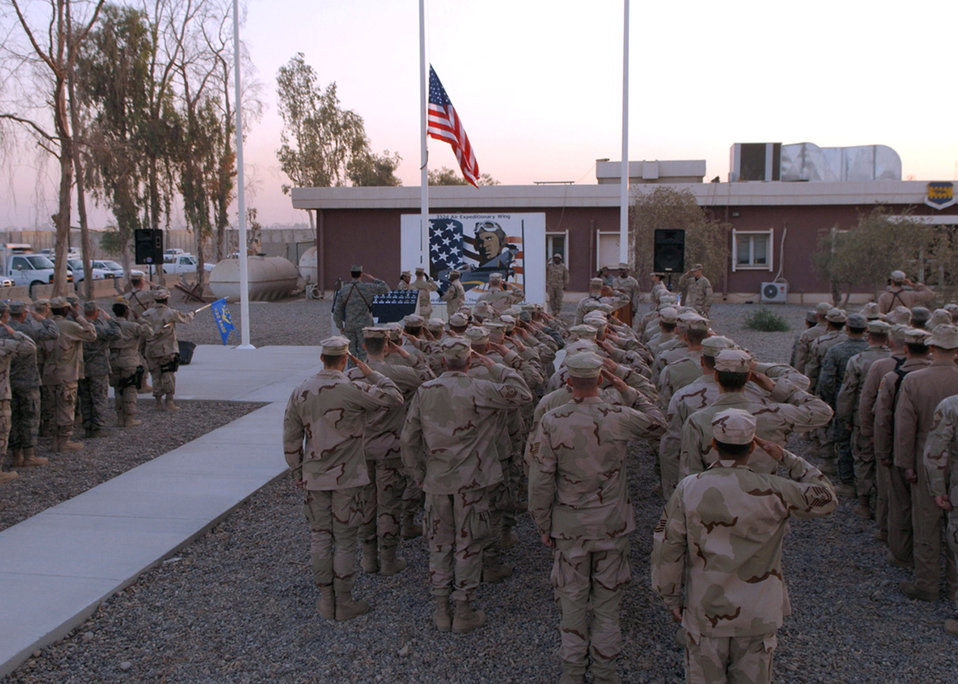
Balad Airmen celebrate Air Force's birthday

Tuskegee Airmen of the 332nd Air Expeditionary Wing salute the American flag during reveille Sept. 18 at Balad Air Base, Iraq. Members of the 332nd AEW, the most forward-deployed Air Force wing in Iraq, held the ceremony in observance of the Air Force's 60th birthday. The wing draws its heritage from the famed 332nd Fighter Group, led by the Tuskegee Airmen of World War II, and carries this spirit in operations here.